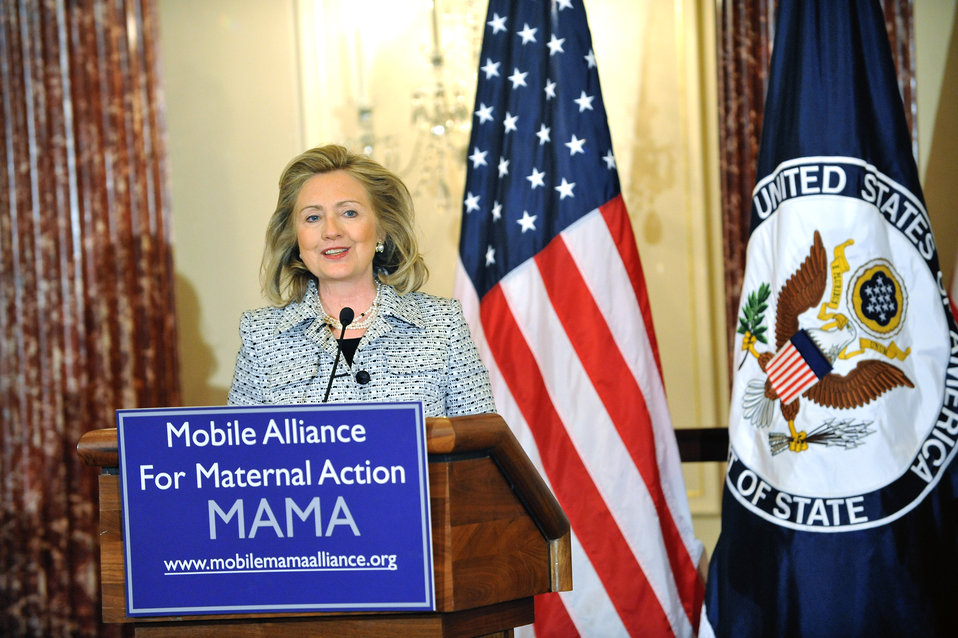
Secretary Clinton Unveils the Mobile Alliance for Maternal Action Partnership

U.S. Secretary of State Hillary Rodham Clinton unveils the Mobile Alliance for Maternal Action (MAMA), at the U.S. Department of State in Washington, D.C., on May 3, 2011.